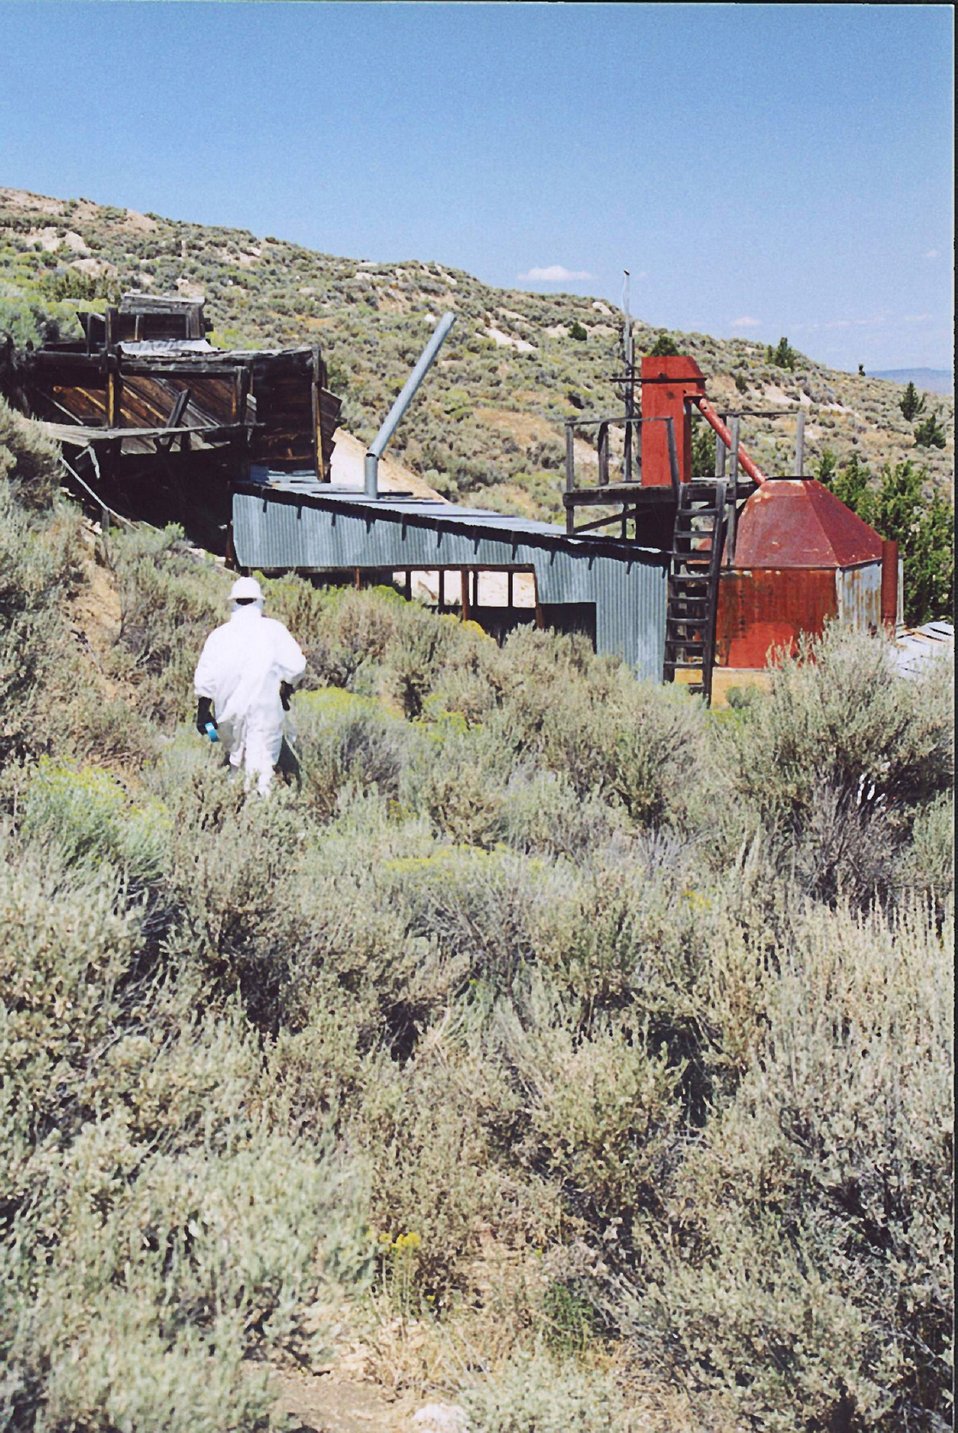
Glass Butte 4 Abandoned Mine Lands just before hazmat clean up. 8/22/02 Photo by Mark Armstrong